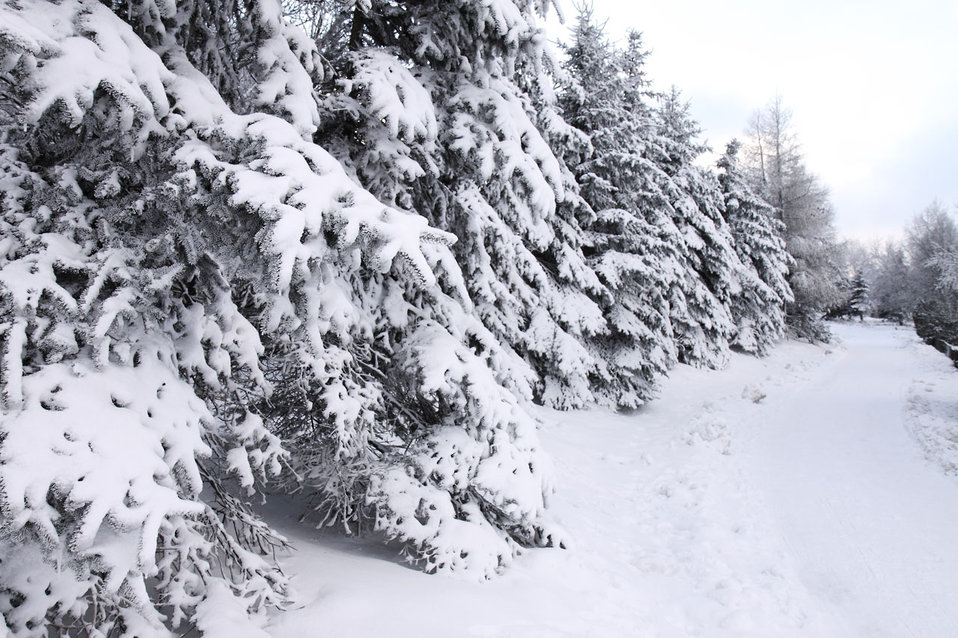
Winter scenery

Forest and path in winter.